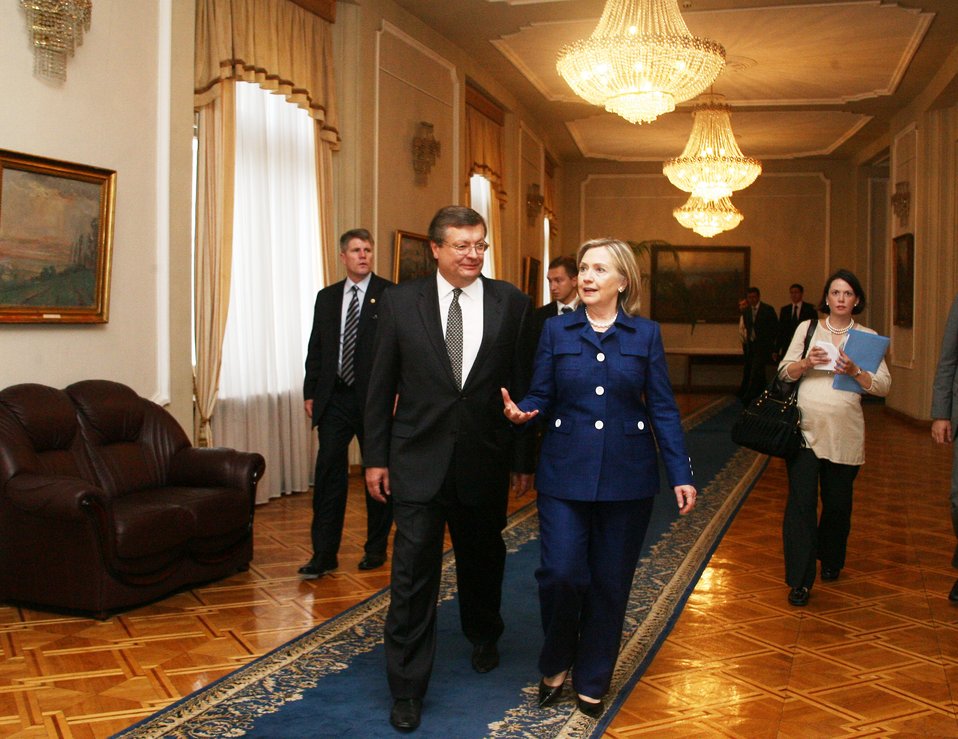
Secretary Clinton Meets With Ukrainian Foreign Minister

U.S. Secretary of State Hillary Rodham Clinton is greeted by Ukrainian Foreign Minister Kostyantyn Gryshchenko at the Ukrainian Ministry of Foreign Affairs in Kyiv, Ukraine, on July 2, 2010.